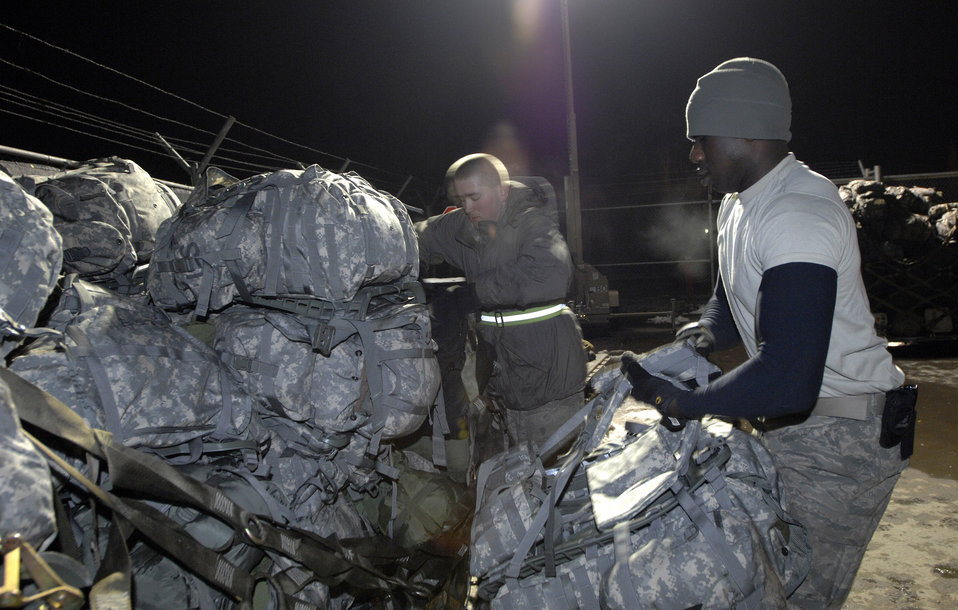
Manas members continue to support coalition operations

Airmen 1st Class Jake Moennich (right) and Shaun Brown palletize duffle bags, backpacks and other deployment gear to be airlifted U.S. forces members being deployed to Afghanistan Feb. 4 at Manas Air Base, Kyrgyzstan. Manas AB serves as a mobility hub for operations in Afghanistan, providing daily refueling missions and supporting personnel and cargo transiting in and out of Afghanistan. Airman Brown and Moennich are both with the 376th Expeditionary Logistics Readiness Squadron and are deployed from McConnell Air Force Base, Kan.